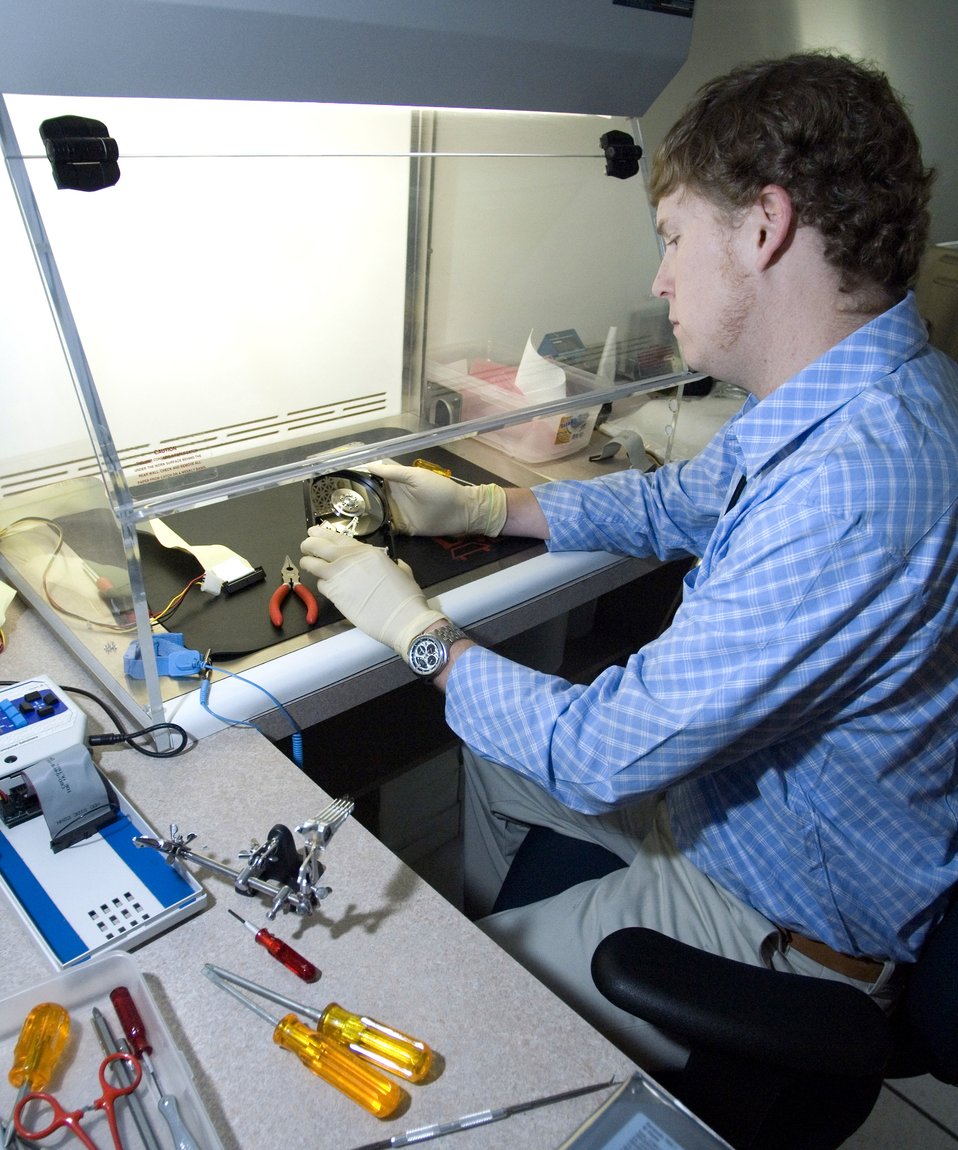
Cyber crime busters

LINTHICUM, Md. (AFPN) -- John Lancaster fixes a computer hard drive so information can be extracted from it at the Defense Computer Cyber Crime Center here Jan. 30. Opened in October 2001, the center was created to efficiently organize, equip, train and use resources to address computer crimes affecting the Department of Defense. The lab is the largest accredited lab of its kind in the world. Mr. Lancaster is a senior forensic repair technician.